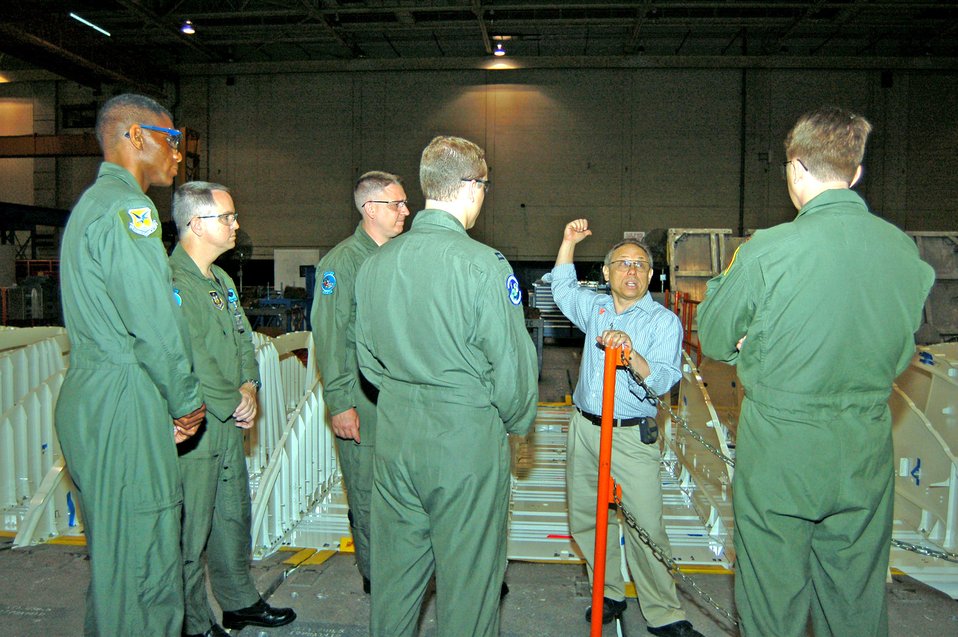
Dover to receive its first C-17

Boeing's Ken VanderHorst provides information about C-17 Globemaster III production to aircrew members from Dover Air Force Base, Del., during a tour of Boeing's Long Beach, Calif., facility May 30. The crew arrived in Long Beach May 29 and assumed ownership of Dover's first C-17 May 31.